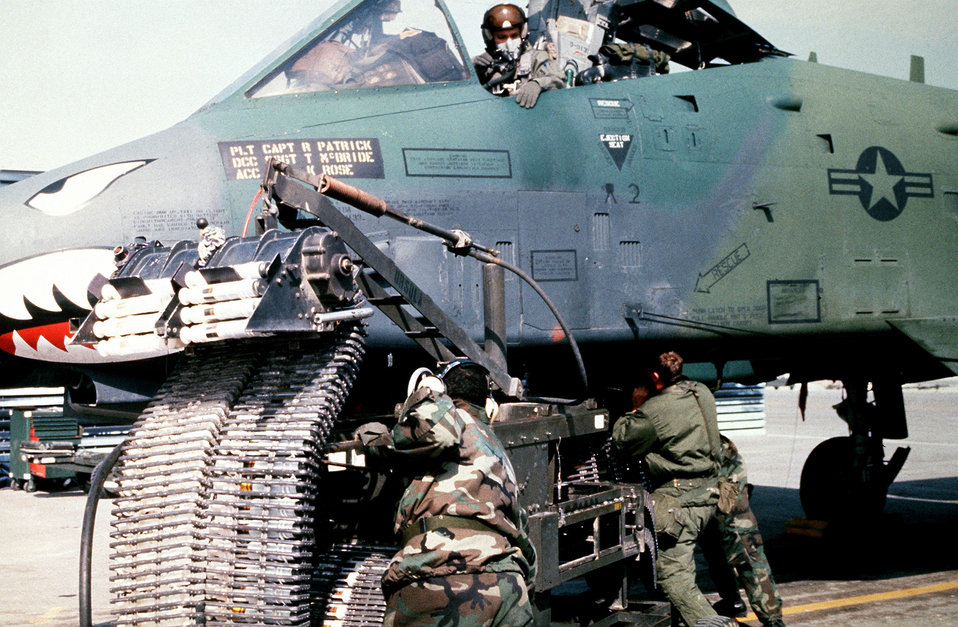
Munitions specialists load ammunition into an A-10A

1990's -- Munitions specialists from the 23rd Tactical Fighter Wing, England Air Force Base, La., load 30mm rounds of ammunition into an A-10A Thunderbolt II attack aircraft for its GAU-8/A Avenger cannon prior to a sortie in support of Operation Desert Storm.